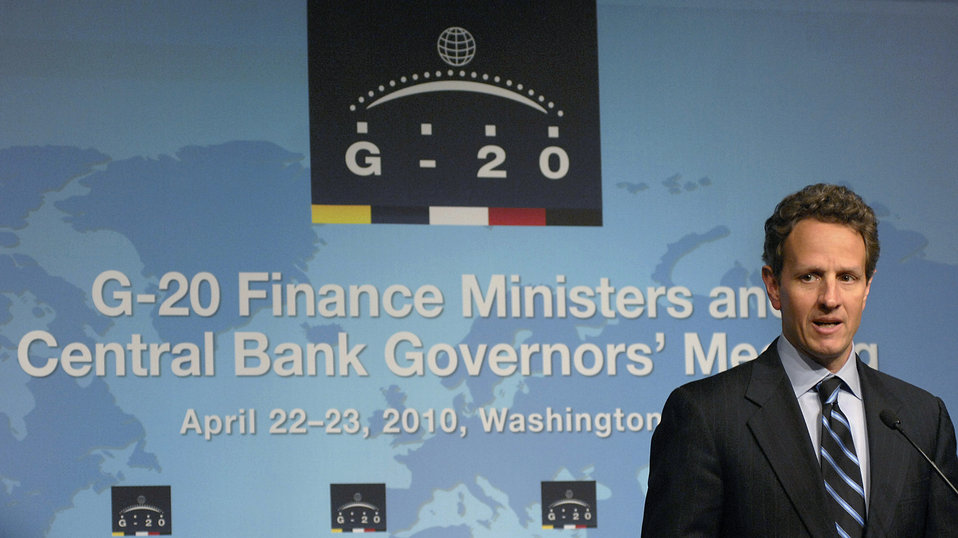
G-20 Press Conference, 4/23/10

On April 23, 2010, Secretary Geithner held a press conference at the conclusion of the G-20 Meeting of Finance Ministers at the IMF.